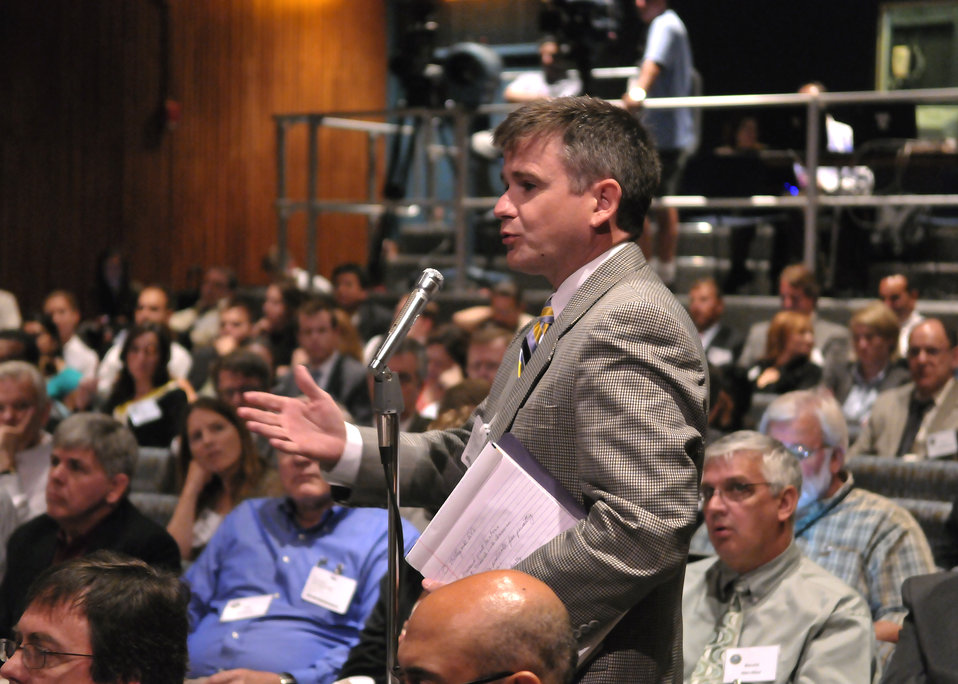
A question from the crowd